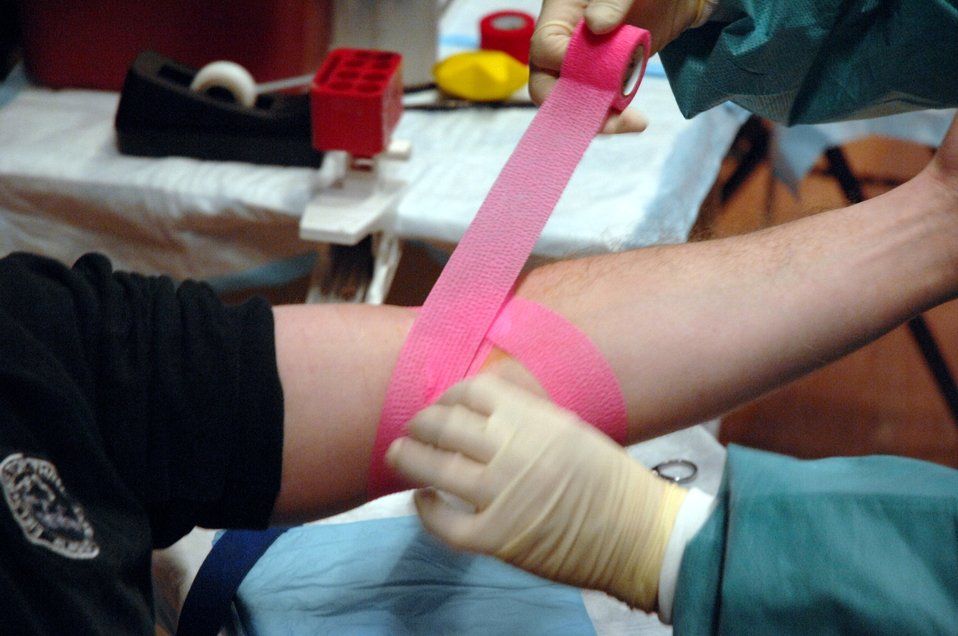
Blood donation

Master Sgt Troy Baird gets the mark of honor as a member of the Blood Bank of Alaska covers the spot where he gave blood during the mobile blood drive Nov. 21 at Eielson Air Force Base, Alaska. The Blood Bank of Alaska supplies blood to military and civilian hospitals throughout Alaska. Sergeant Baird is with the 354th Communications Squadron.